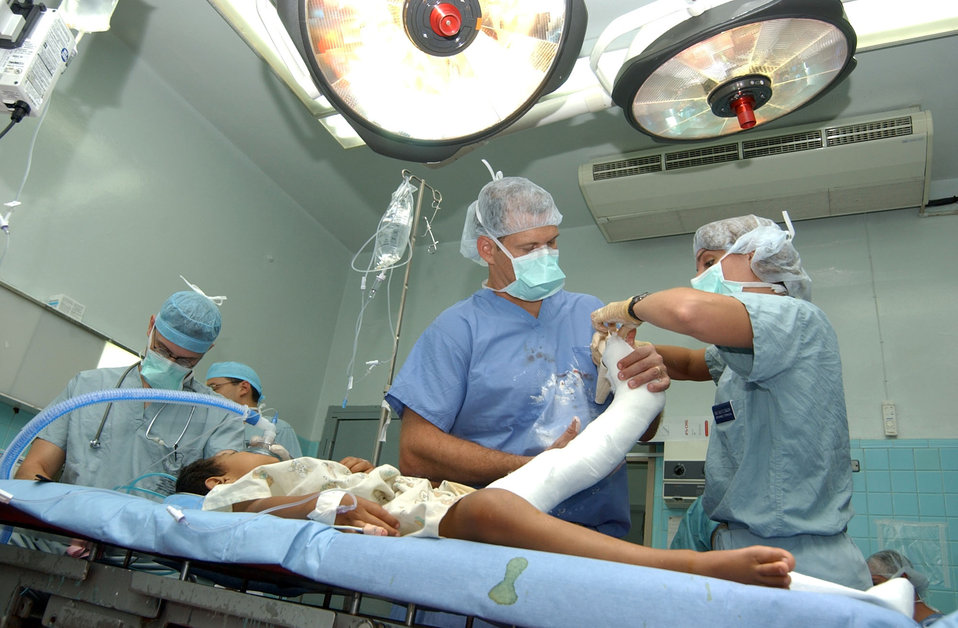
Americans, Hondurans team to fix broken bones

Lt. Col. (Dr.) Eric Ritchie (left) and Staff Sgt. Jolie Zygulski wrap a cast molding around the leg of a patient after successful surgery Aug. 15 at the Hospital Esquela in Tegucigalpa, Honduras. A medical team of eight people from Wilford Hall Medical Center at San Antonio and Joint Task Force-Bravo at Soto Cano Air Base, Honduras, treated more than 200 people and operated on more than 60 individuals during its two-week training exercise Aug. 5 to 19. Colonel Ritchie and Sergeant Zygulski are from the Wilford Hall Medical Center, San Antonio.